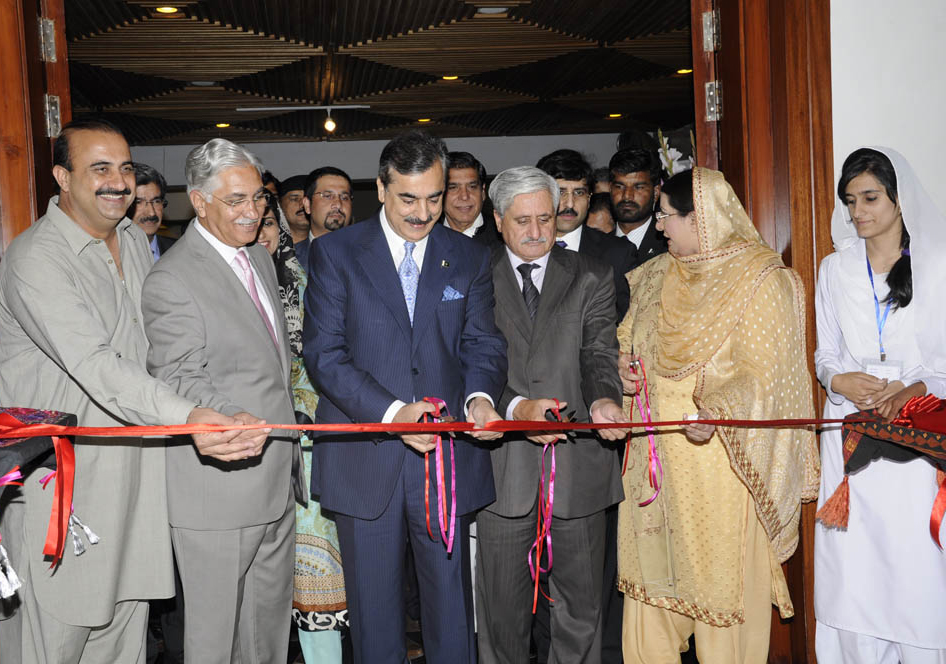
Photography and Drawing Exhibition on Pakistan 2005 Earthquake “Rebuilding Together: With Dignity and Hope”

Syed Yousuf Raza Gilani, Prime Minister of Pakistan, cutting the ribbon of a photo exhibition 'Rebuilding Together: With Dignity and Hope' sponsored by USAID at Pakistan National Council of Arts (PNCA) in Islamabad .